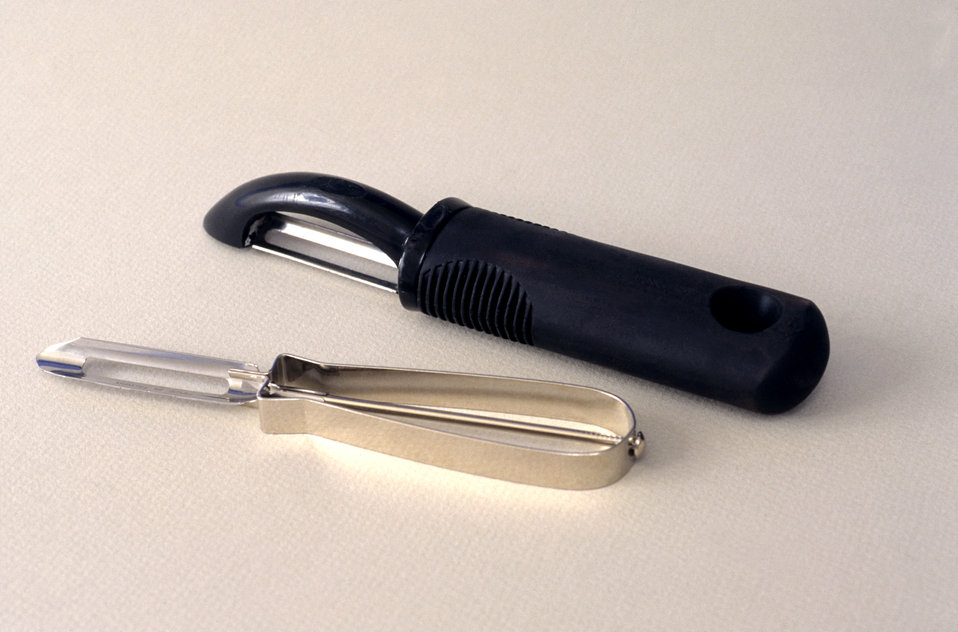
This 1996 photograph, is one of four PHIL images (see PHIL# 9117, 9118 and 9120), which depict the 'Good Grips�', larger, rubber-handled potato peeler with its smaller, all metal, hard edged cousin. The larger, softer, and more easily held peeler was designed with a greater degree of ergonomic user-friendliness in mind. It is able to comfortably fit a wider range of hand sizes with its softer, rubber handle. With both the rubber-handled version, and its all-metal counterpart lying side-by-side, this image illustrates how much easier it really would be to grasp the larger, rubberized kitchen implement than its all-metal counterpart.